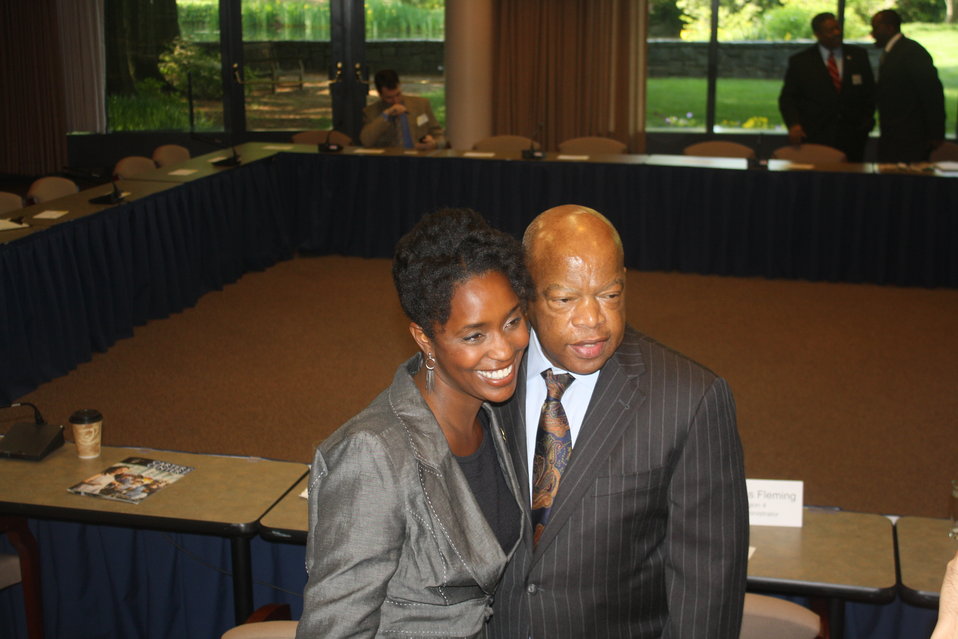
Faith-Based and Neighborhood Partnership launch at Atlanta's Carter Center